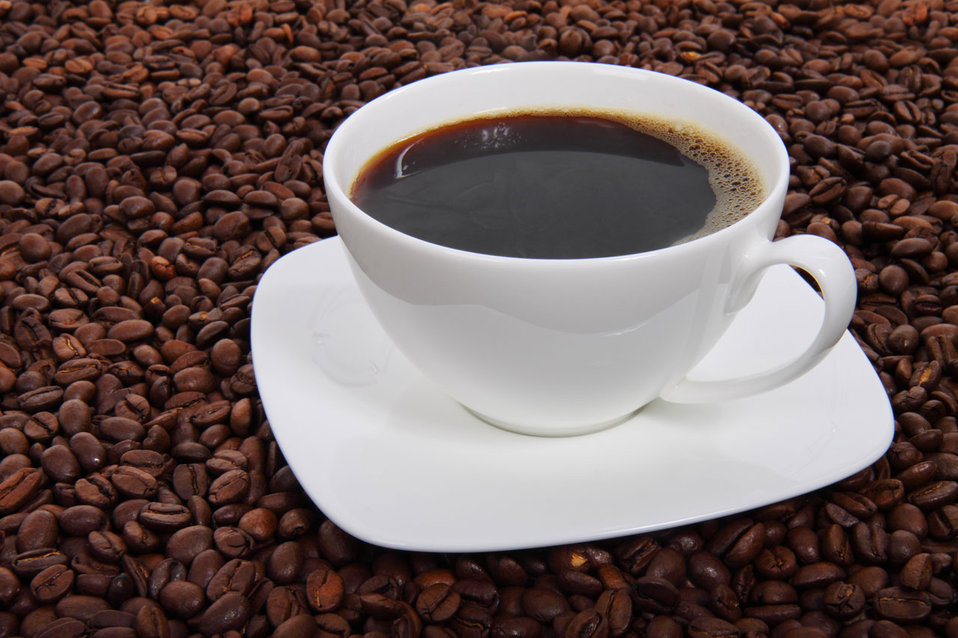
Cup of coffee surrounded with coffee beans.